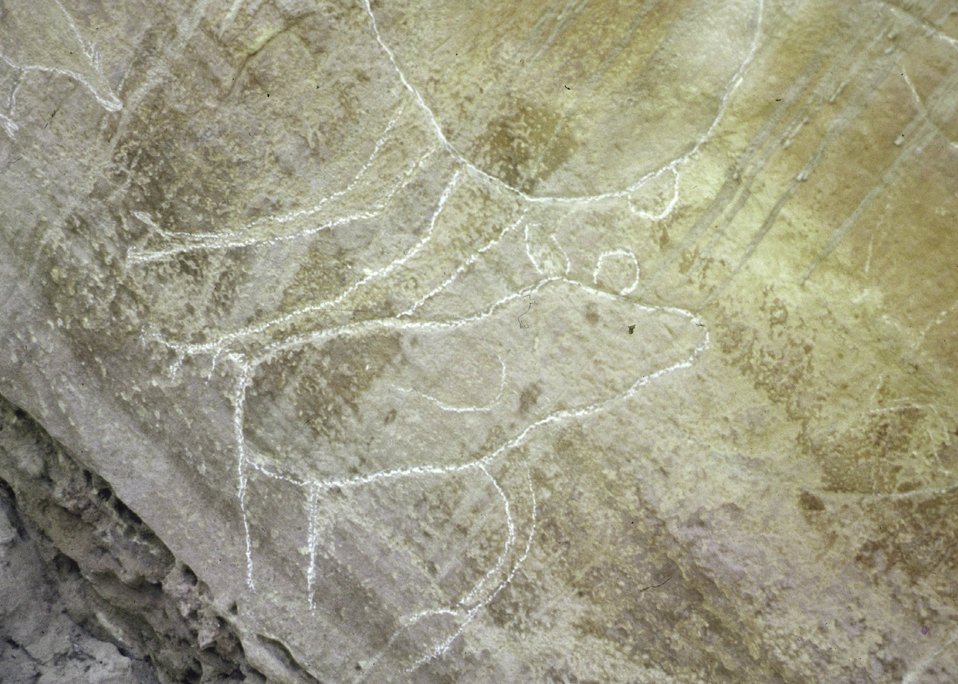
Petroglyphs near Medicine Lodge Creek, Hyattville, Wyoming.